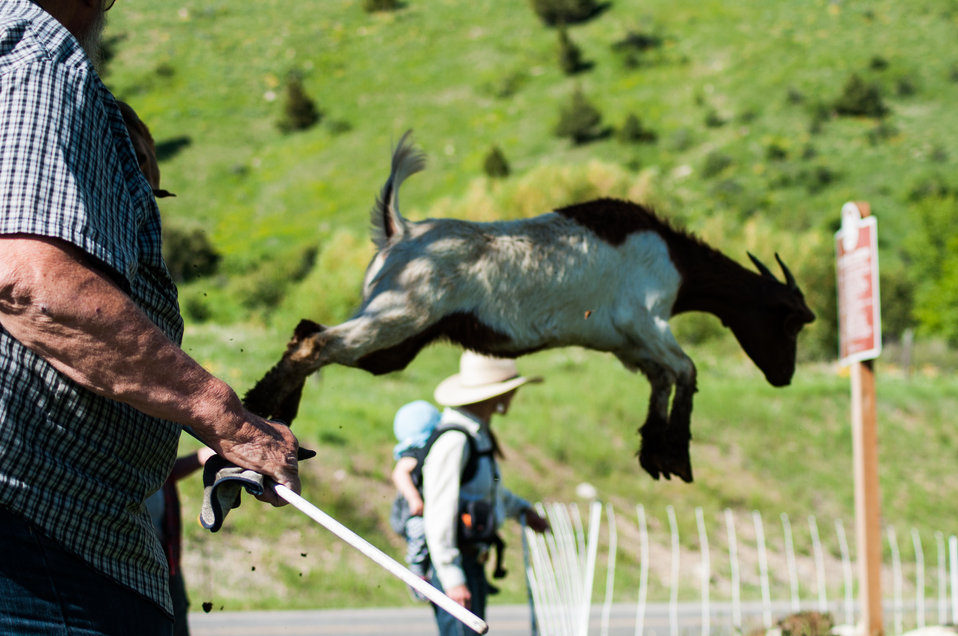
Goat landing on Bozeman Fish Technology Center

On June 8 at 5:00 p.m., 409 yearling domestic goats were off-loaded on the Bozeman Fish Technology Center (BFTC) campus. Thus begins a 3-4 year project of monitored targeted grazing and applications of friendly insects to control noxious weeds and manage brush overgrowth on property of the U.S. Fish and Wildlife Service BFTC.

Purposes of this effort are to reduce the presence of undesirable vegetation, promote restoration of native plants, and assist with fire protection by reducing burnable plant biomass.

The cooperative venture involves the U.S. Fish and Wildlife Service, Montana Outdoor Science School, Friends of the Bozeman Fish Technology Center, Gallatin Valley Land Trust, U.S. Forest Service, and Prescriptive Livestock Services. Integrated Weed Control is supplying the insects as an in-kind contribution to the project, and has applied insects on the BFTC’s 'hot spots' in previous years.